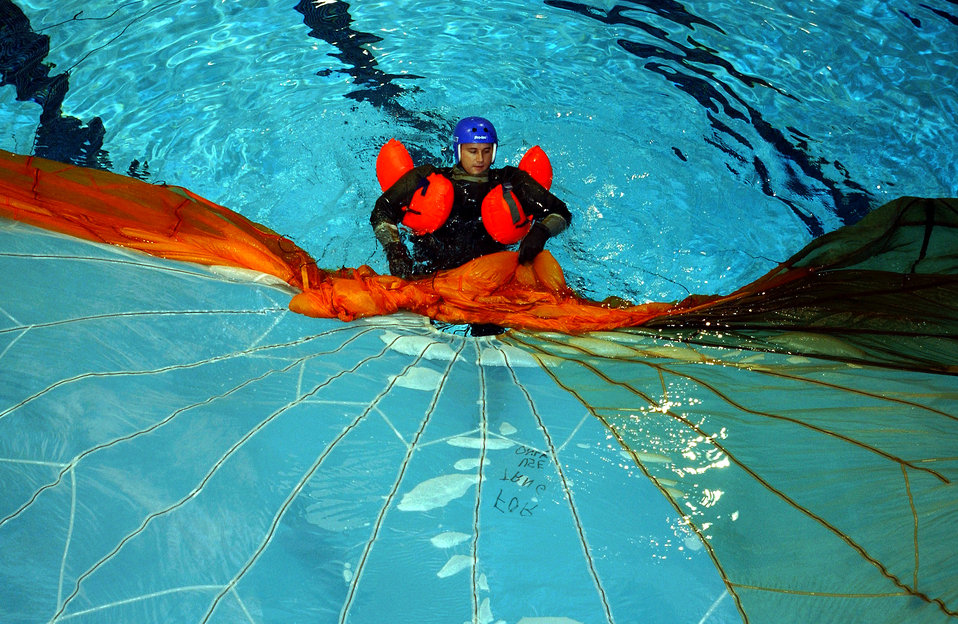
Water survival

ELMENDORF AIR FORCE BASE, Alaska -- Capt. Jason Sanderson shows his water survival skills as he untangles himself from a parachute at the base pool during the wing operational readiness inspection April 2. Captain Sanderson is with the 517th Airlift Squadron here.